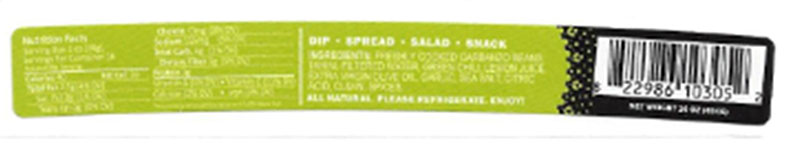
RECALLED – Green Chile Hummus and Wraps

February, 20 2014 – Product Recall – Falafel King Voluntarily Recalls Hatch Green Chile Hummus and Hatch Green Chile Wraps Because of Possible Health Risk.